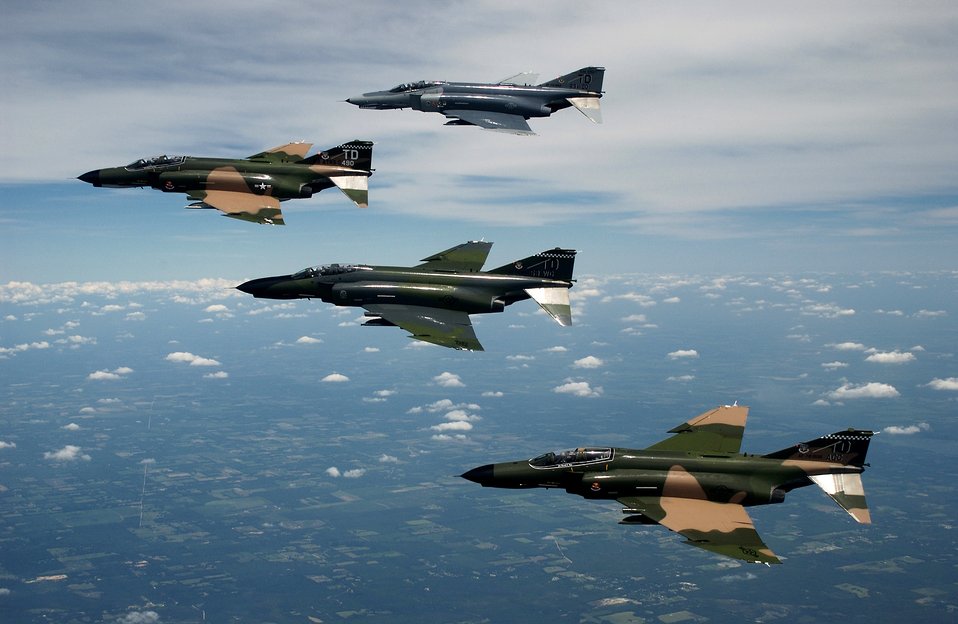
Flight demonstration

OVER FLORIDA -- A formation of F-4 Phantom II fighter aircraft fly in formation during a heritage flight demonstration here. The heritage flight program was established in 1997 to commemorate the 50th Anniversary of the U.S. Air Force.